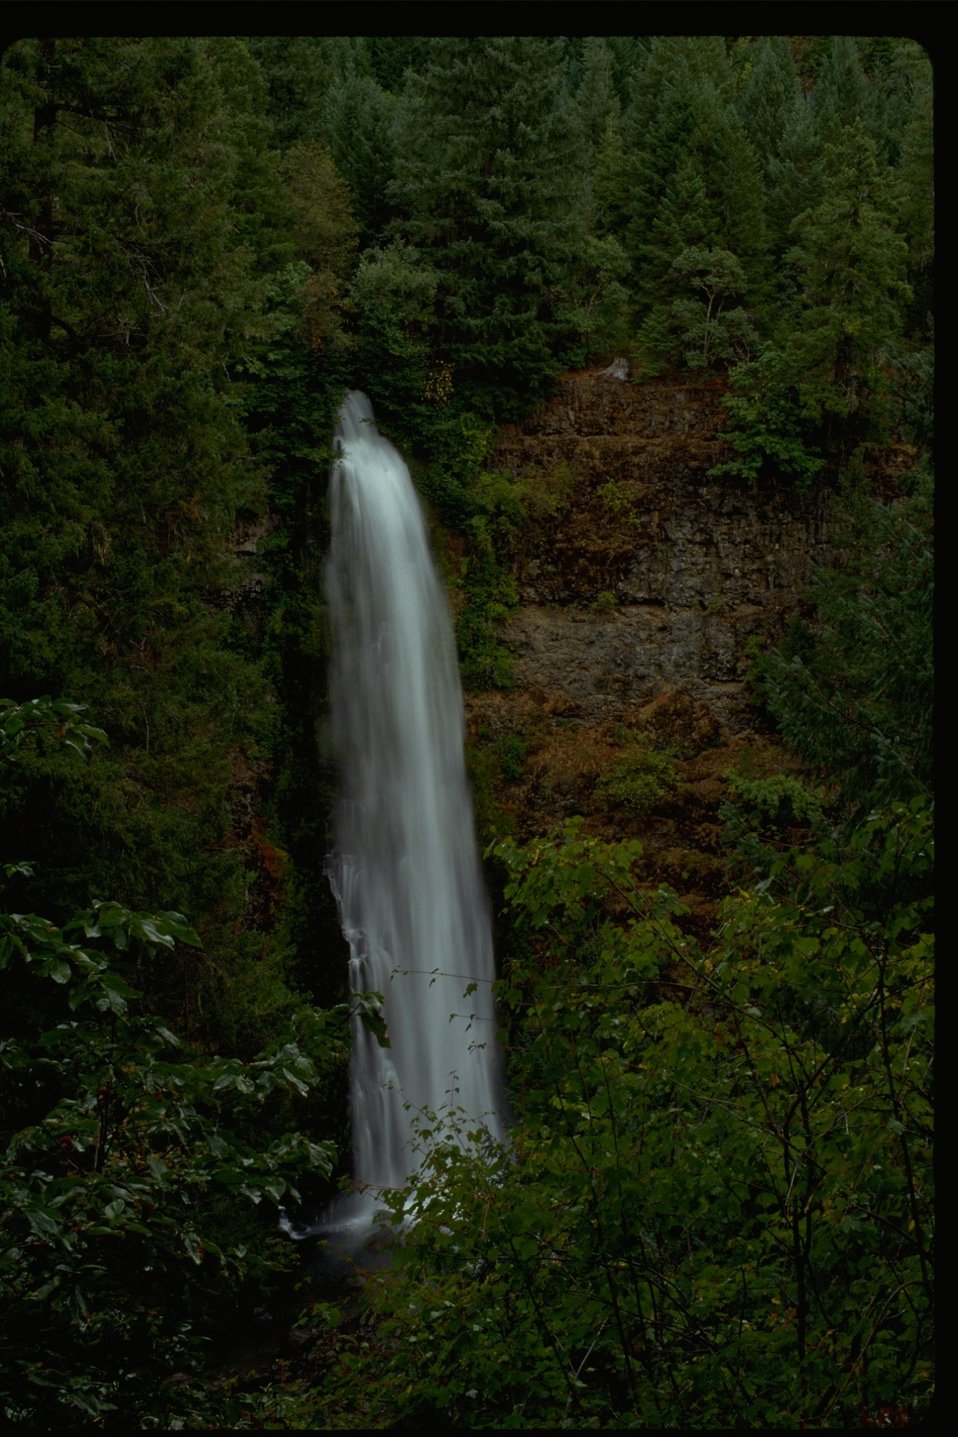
Nightfall at the Mill Creek Falls on the Upper Rogue River.